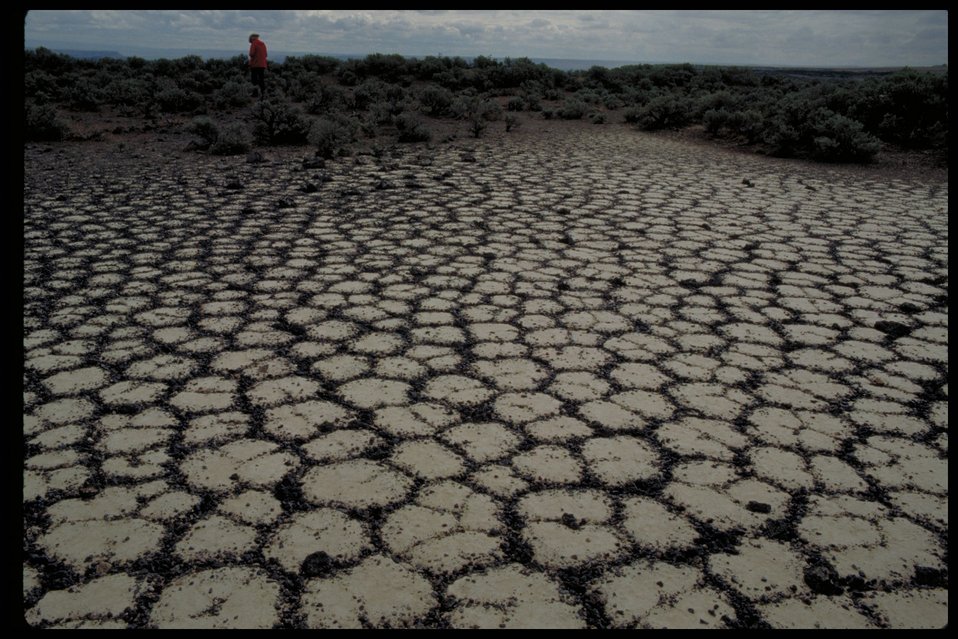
Playa above the Narrows Oregon Trail Lower Snake River District